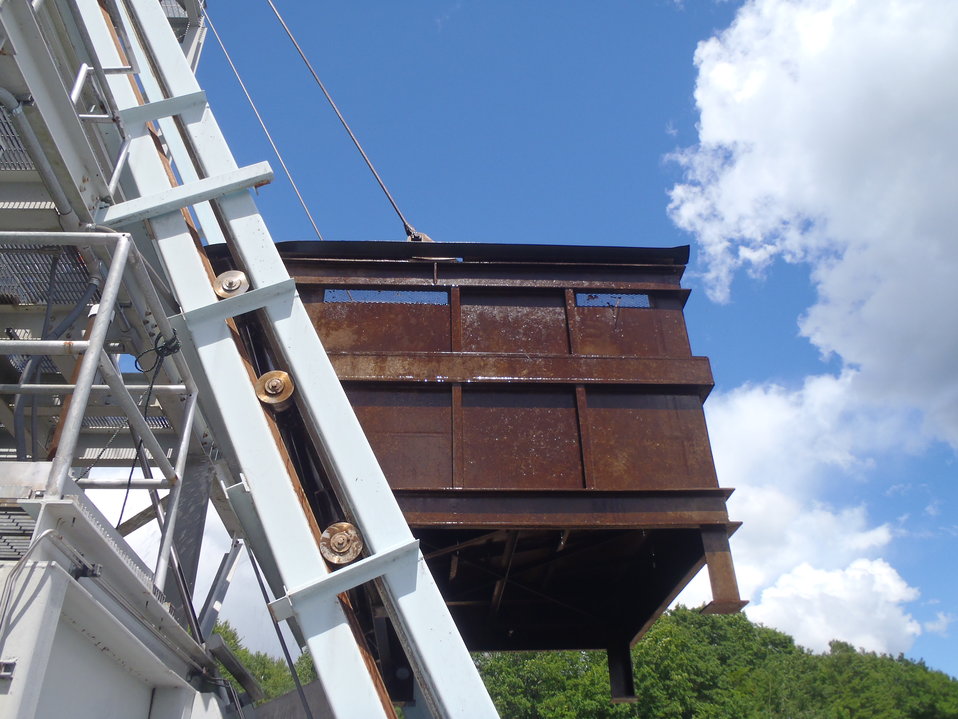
Fish lift hopper